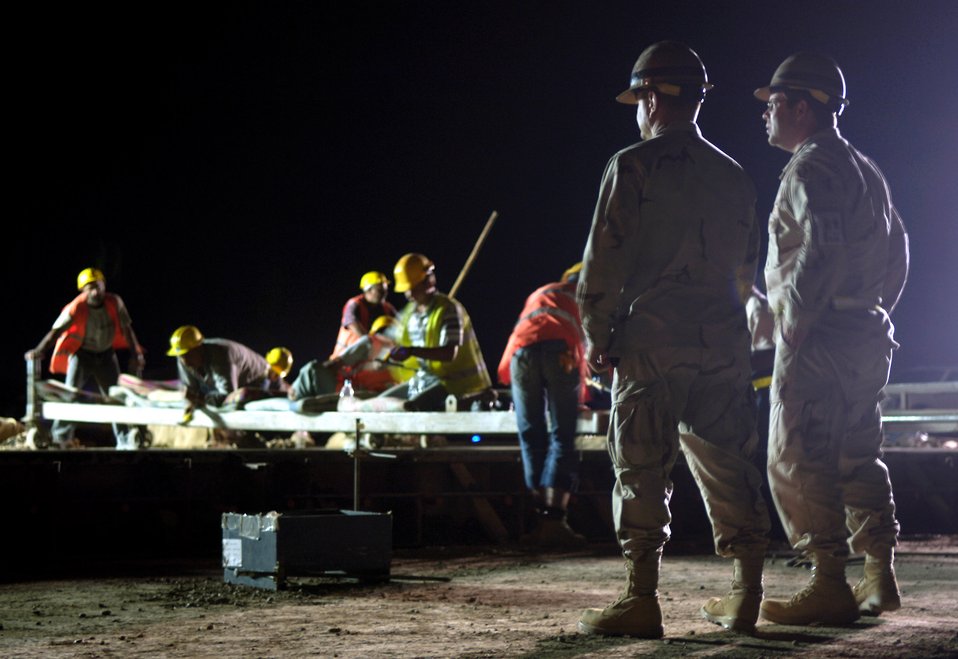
Runway repair reduces FOD at Balad

Maj. Matthew Jefson (left) and James Witmer look on as contractors working with the Air Force and the U.S. Army Corps of Engineers replace a section of runway at Balad Air Base, Iraq, on Thursday, May 18, 2006. The runway had extensive damage causing it to break apart and create foreign object debris. More than 1,000 meters of the runway will be replaced. Major Jefson is a project manager for the U.S. Central Command Air Forces' construction management office and Mr. Witmer is a project engineer for the Corps of Engineers.